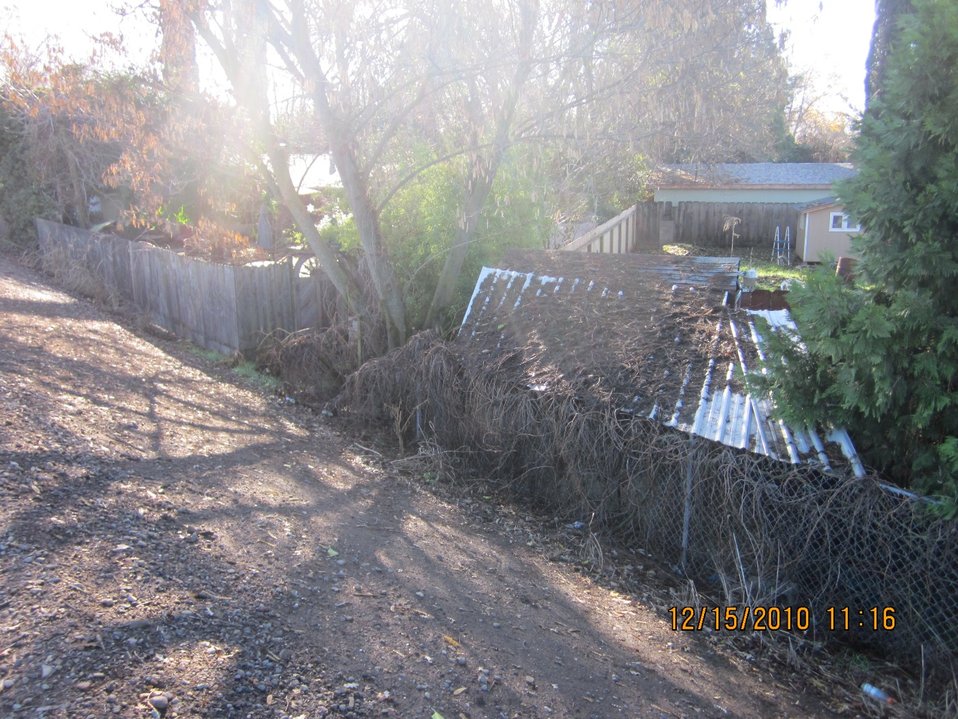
Encroachments on a Chico-area levee

Encroachments in the Chico, Calif., area, shown during a levee inspection in December 2010. The U.S. Army Corps of Engineers inspects levees in its Rehabilitation and Inspection Program to ensure levees don’t pose an unacceptable risk to lives and to provide levee managers and residents with detailed information on the condition of levees to help them make informed decisions about safety.